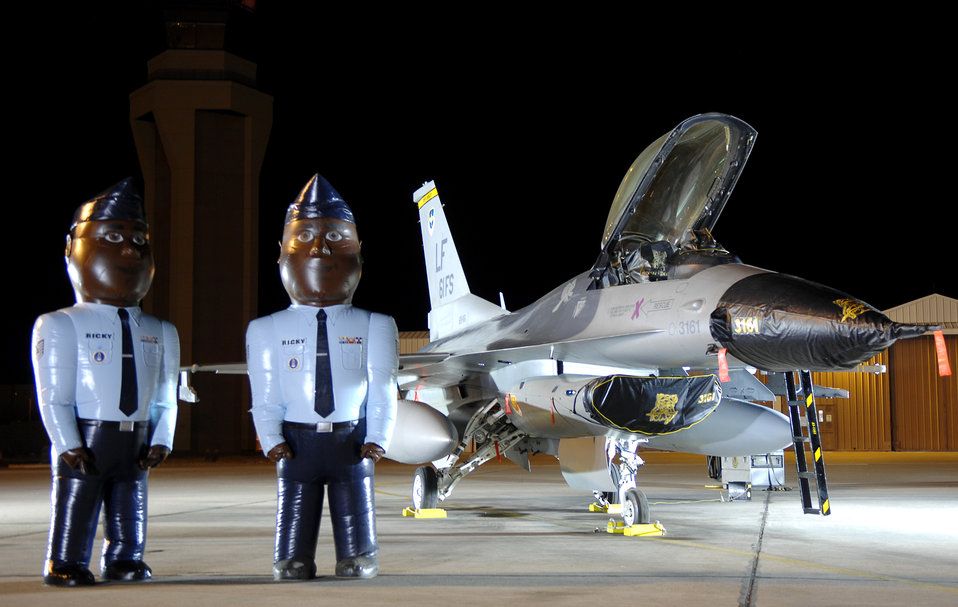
Weather forecaster brings morning show to Luke AFB

Two larger than life Airmen stand beside an F-16C Fighting Falcon as one of the backdrops to Good Morning Arizona, a morning show remotely filmed at Luke Air Force Base March 22. The show featured demonstrations from different careers throughout the Air Force and helped promote Air Force Week.